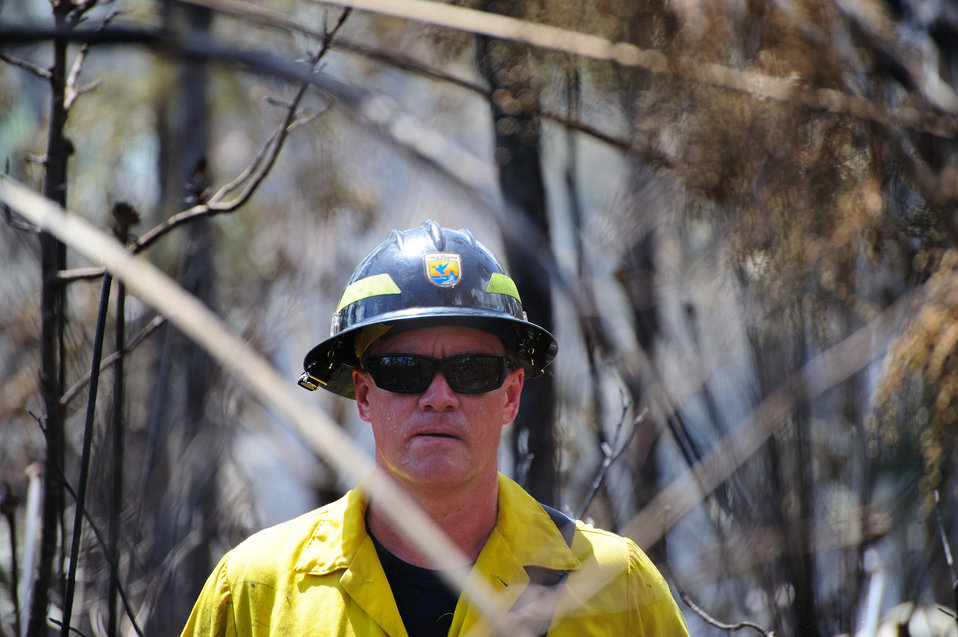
Photo of the Week: All in a day's work at National Key Deer NWR, Florida Keys

Grant Gifford A.R.M. Loxahatchee NWR on a prescribed fire at National Key Deer NWR

From the Flickr Collection of the USFWS Southeast: